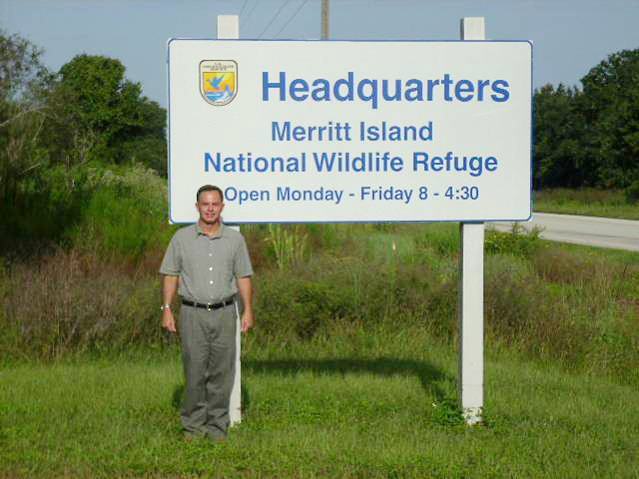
Kerry Lyons served in the Coast Guard 1986 to 1990 onboard US Coast Guard Cutter CHEROKEE as a Seaman, and USCG LORAN Station Malone, Florida as an Electronics Technician. He was a Petty Officer 2nd Class (E-5) when he got out. He is still in the USCG Reserves as officer Lieutenant Commander (select), as a Marine Safety Inspector and Intelligence Officer.